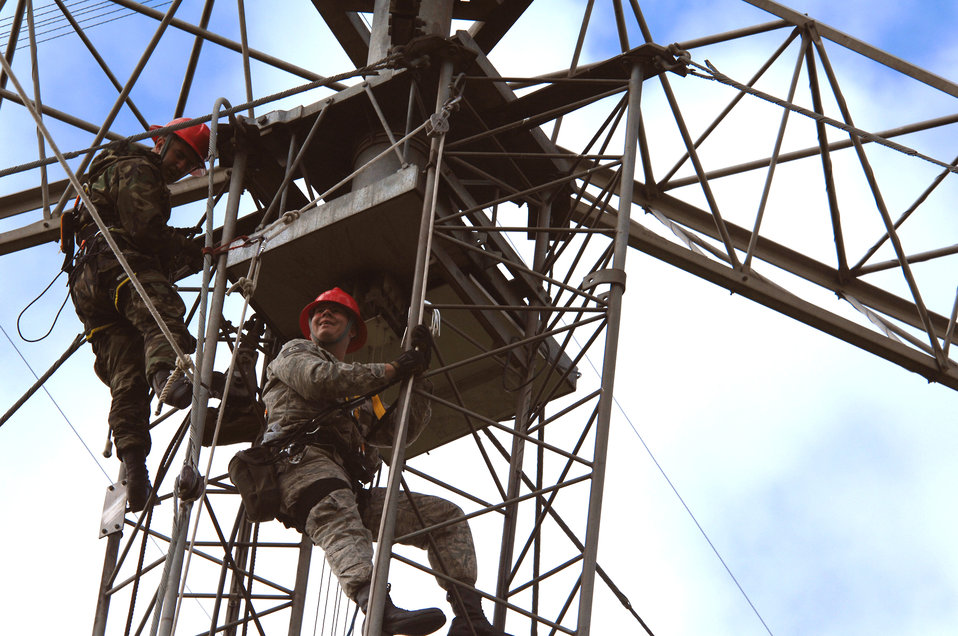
Airmen ensure communications capability for joint, coalition success

Tech. Sgt. Tim Daniel and Staff Sgt. Sean Lavely perform annual preventative maintenance inspections on an antenna systems Sept. 18, 2009, at Royal Air Force Barford, England. They are from Kapaun Air Station, Germany, as part of the 1st Communications Maintenance Squadron cable and antenna theater maintenance team.